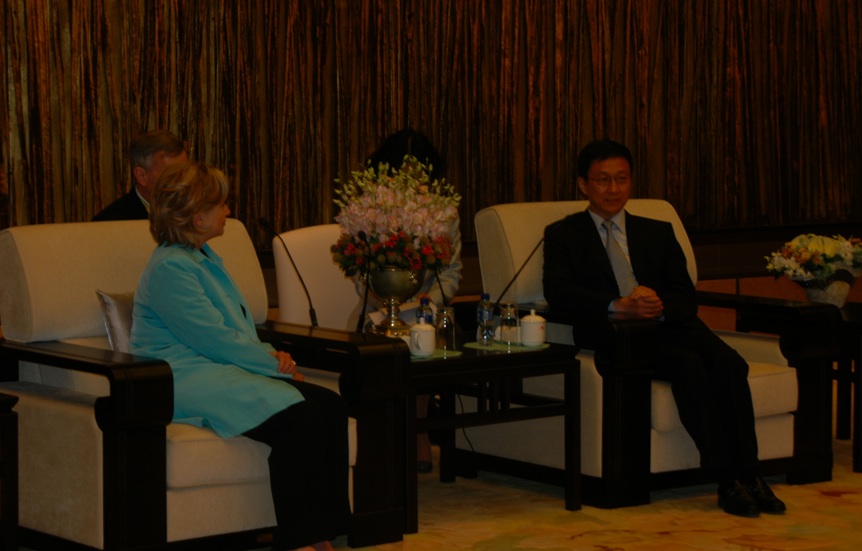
Secretary Clinton Meets With Shanghai Mayor Han Zheng

U.S. Secretary of State Hillary Rodham Clinton speaks with Shanghai Mayor Han Zheng during their meeting at the China Pavilion at the World Expo site, Shanghai, China, May 22, 2010.